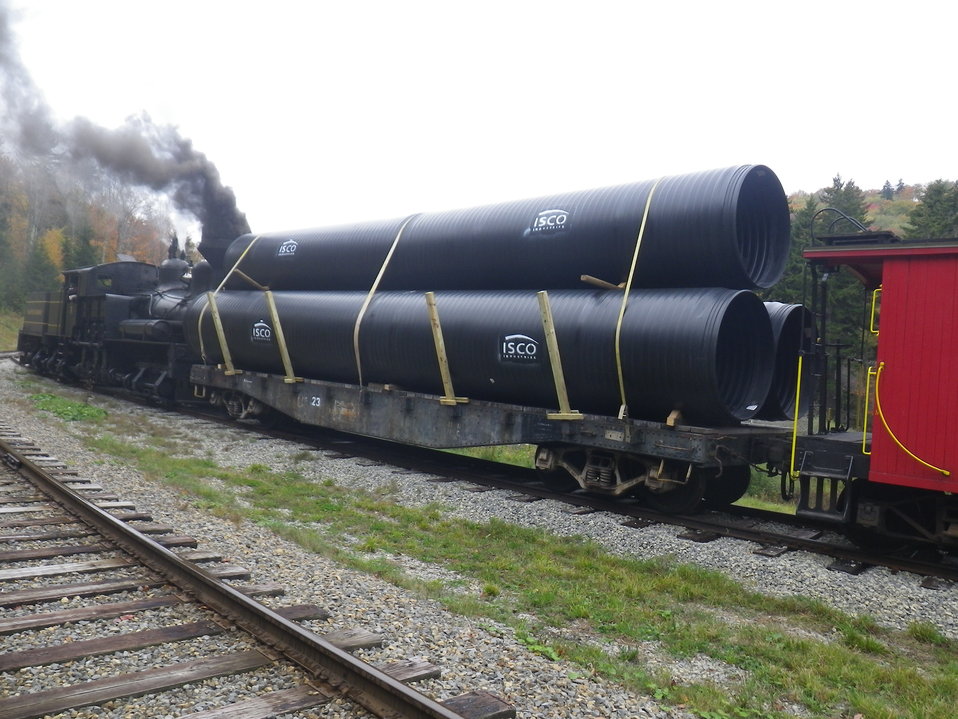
On track for restoration

Pocahontas County, West Virginia, October 1, 2012.: An original Shay engine #5 transport culverts to a fish passage project in a roadless area on Oats Run in Spruce, WV. Oats Run is a headwater tributary of Shavers Fork that has native Eastern brook trout. The culverts are part of a large-scale restoration project to improve fish passage. Cass Scenic Railroad is a partner in the project funded by the Eastern Brook Trout Joint Venture. The engine was once used to haul timber from Spruce, once a bustling town, but now abandoned. Cass Scenic Railroad will haul all materials and heavy equipment via the rail line.